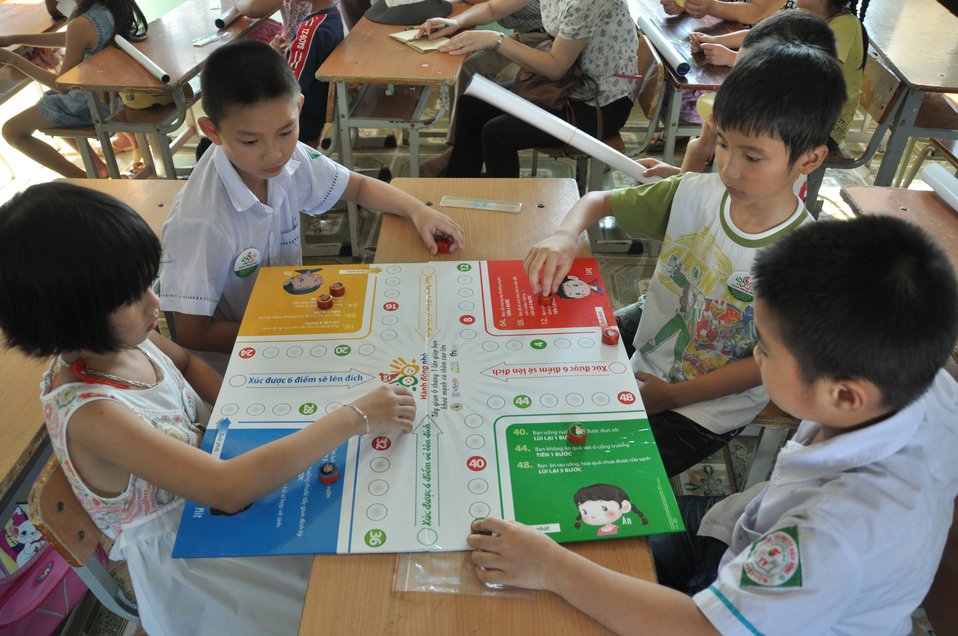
USAID supports deworming education and medication distribution in Bac Giang Province

May 20, 2013